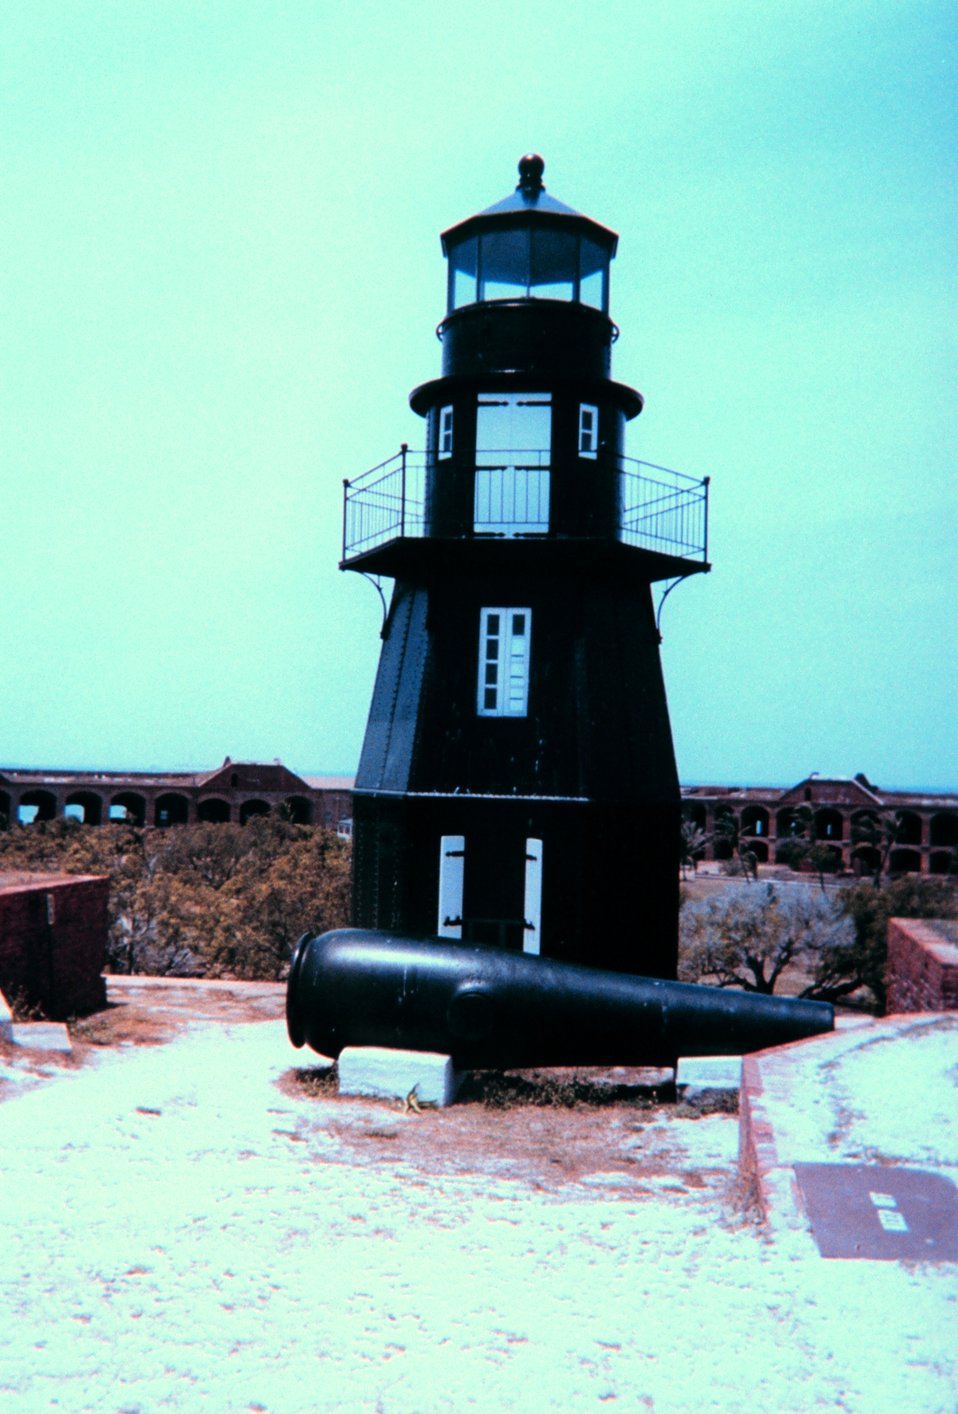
The lighthouse at Fort Jefferson, Dry Tortugas National Park.